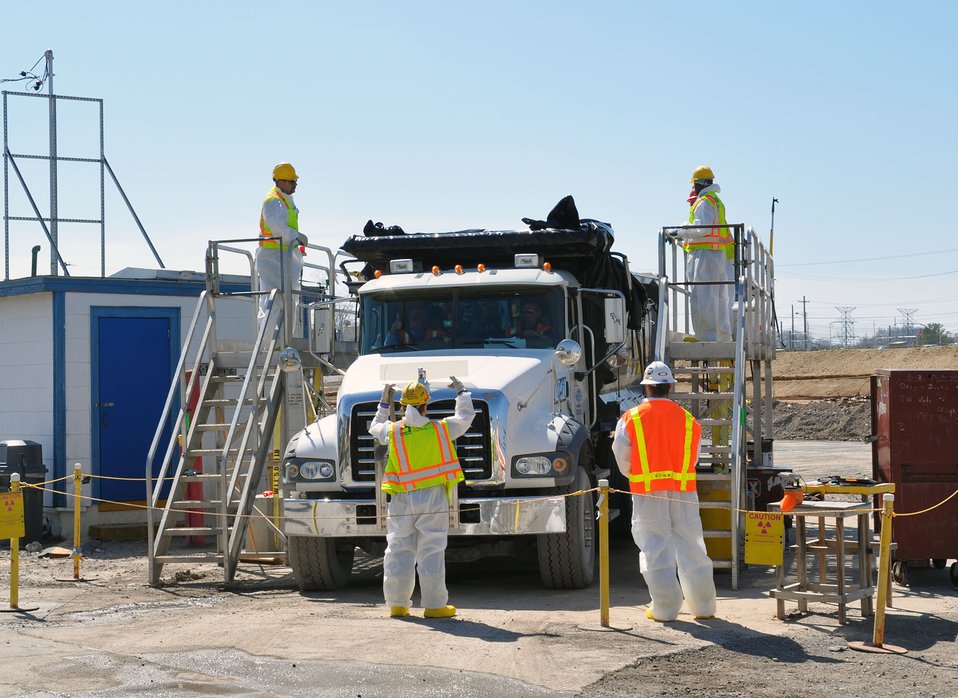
Last Shipment from K-25 DandD

189 Photo Wayne McKinney 3-11-2014 Oak Ridge Tennessee